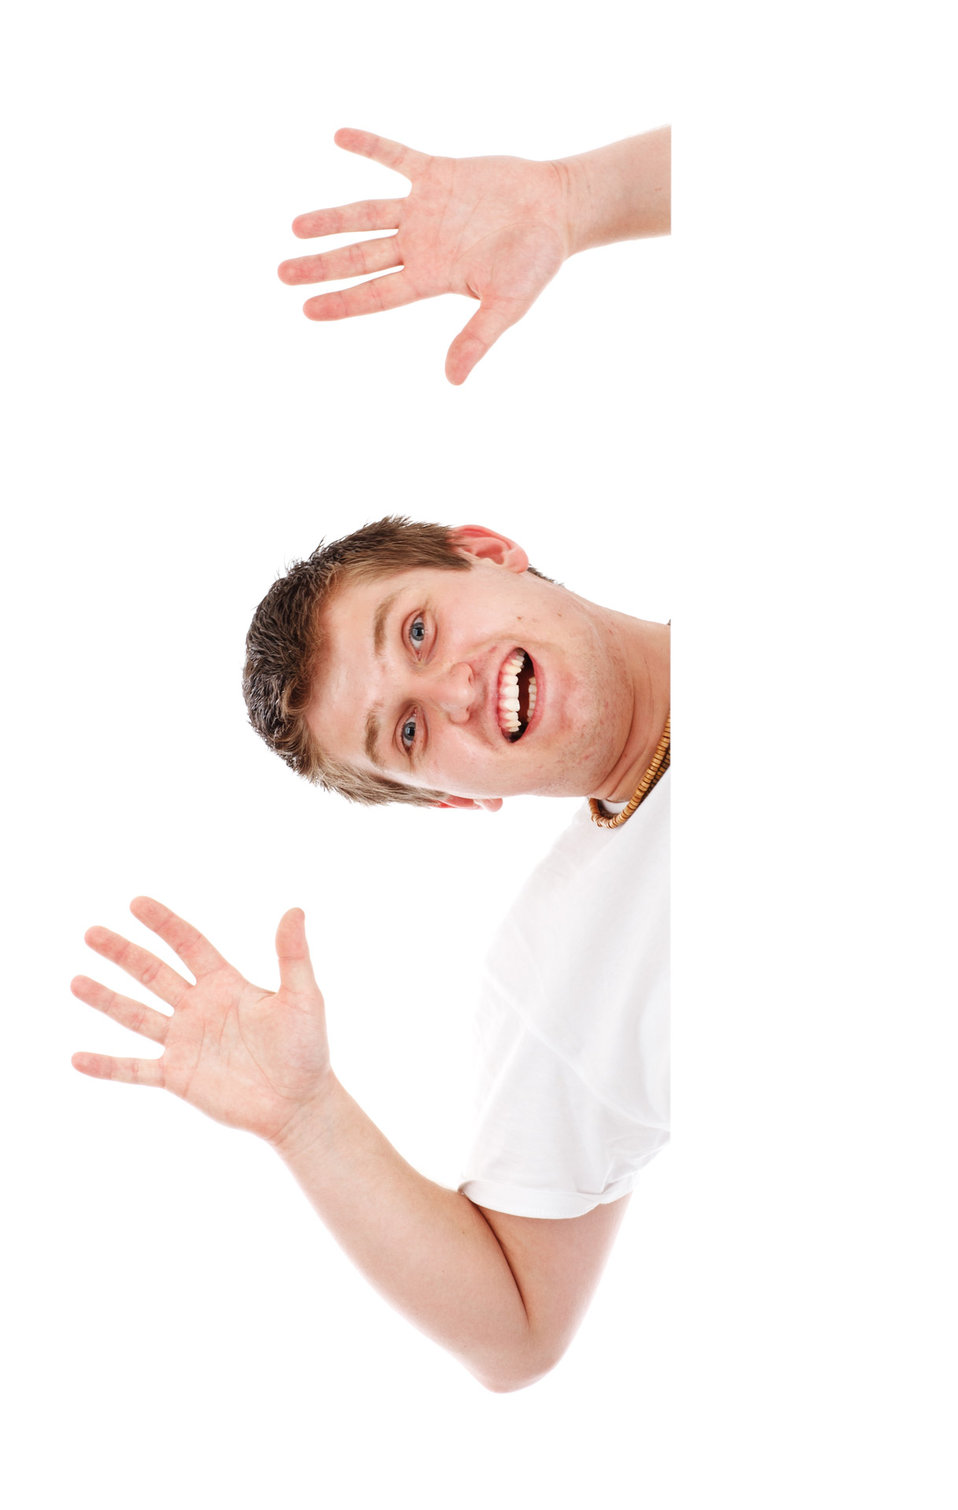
Young man waiving from behind a white board.